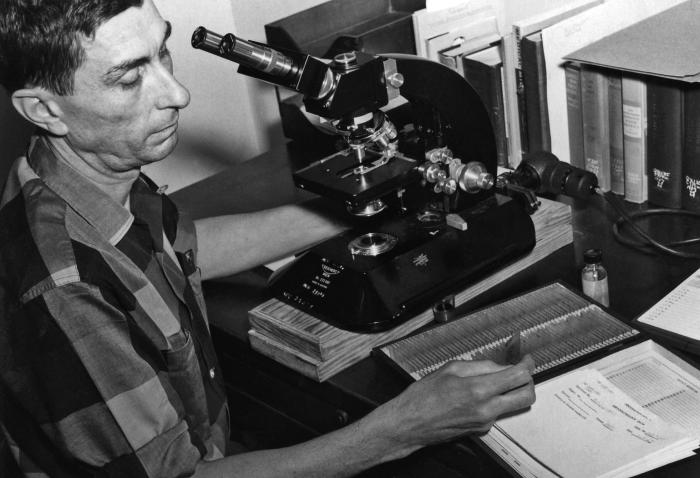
This photograph showed internationally known Centers for Disease Control microbiologist Charles C. Shepard, M.D., as he was carrying out microscopic examinations of selected slide specimens in his laboratory.